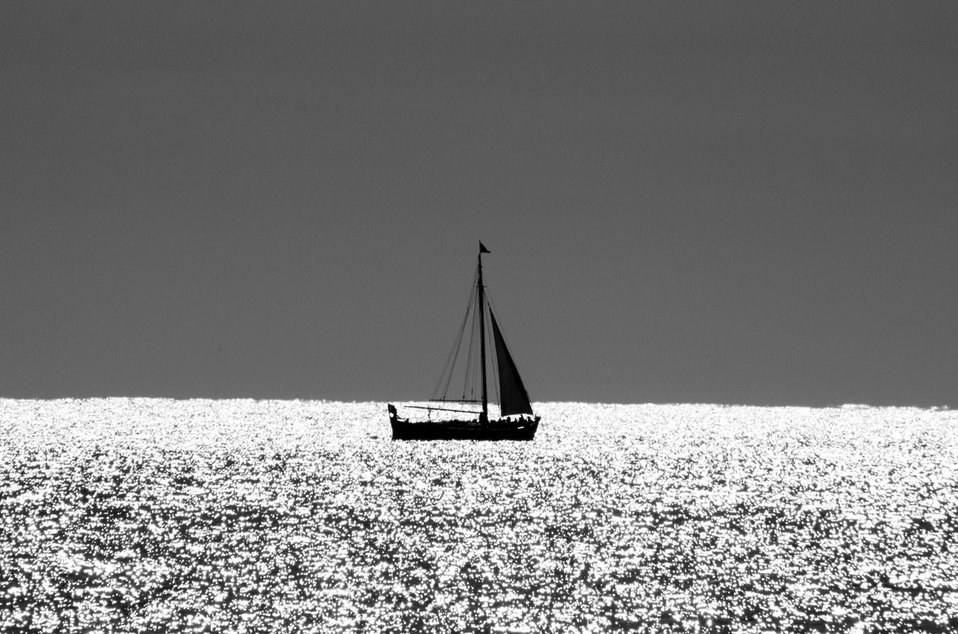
Boat at sea

Boat in the sparkling sea.